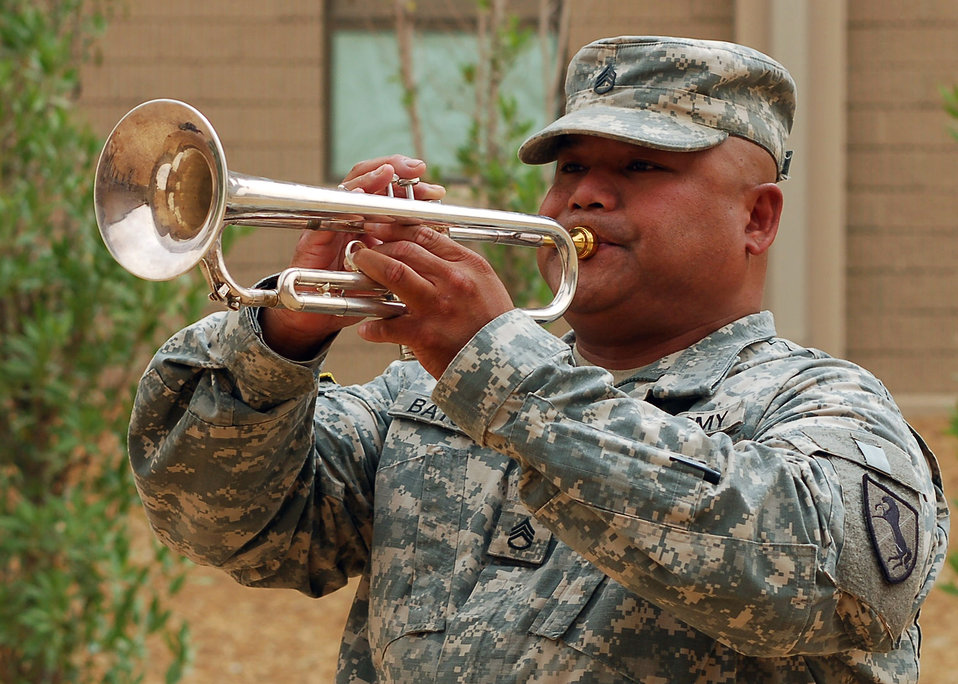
Airmen, Soldiers pay respects to fallen comrade in arms

Army Sgt. Ronald Batula plays